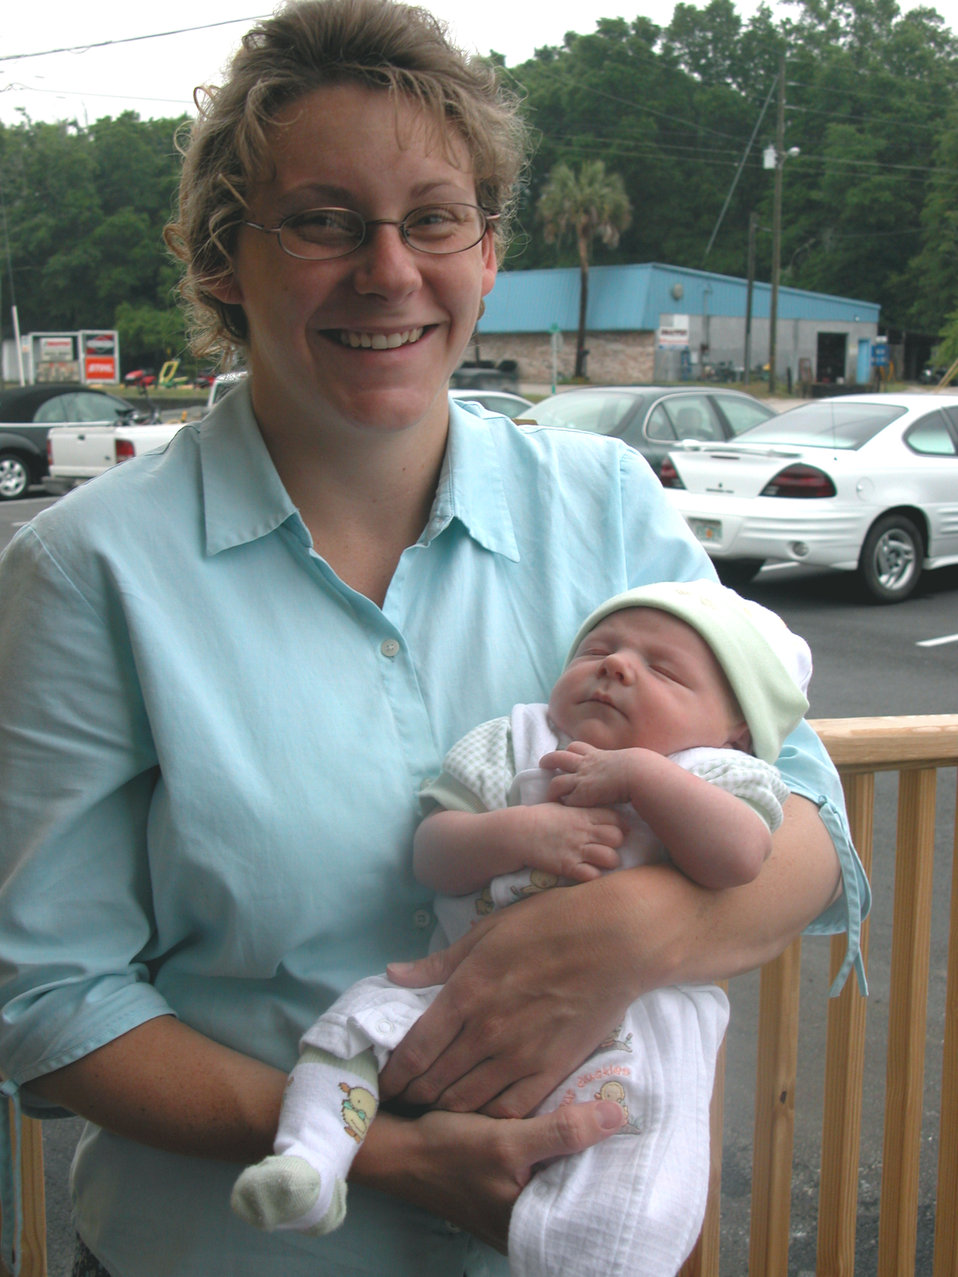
Special delivery delays test mission

DEFUNIAK SPRINGS, Fla. -- Jennifer Cheshire stands with her son, Joshua Malachi. He was affectionately nicknamed